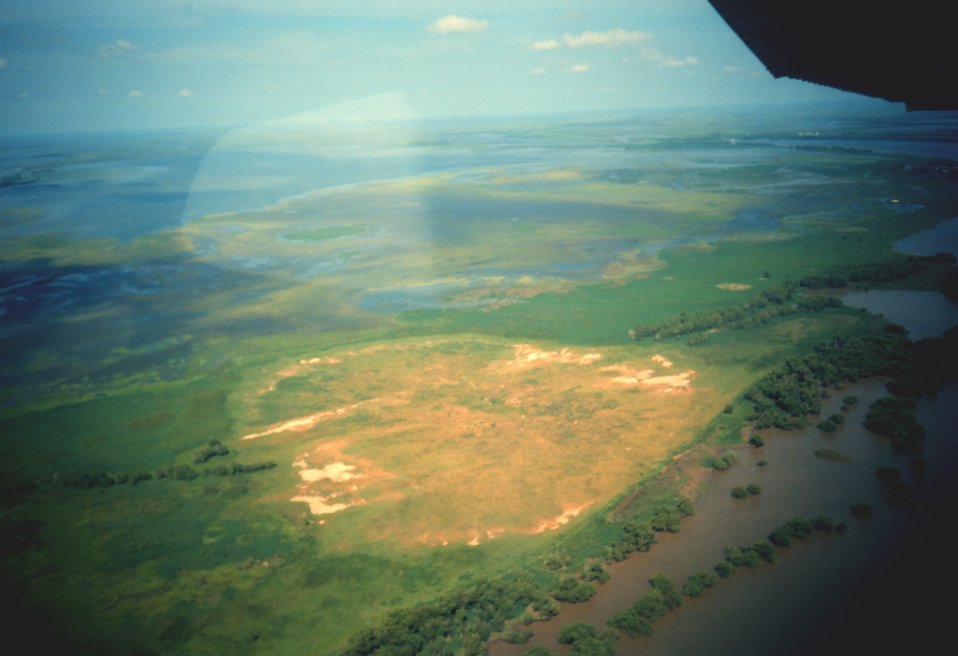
Light-colored area is dredge material deposited during maintenance of channels in Mississippi Delta.